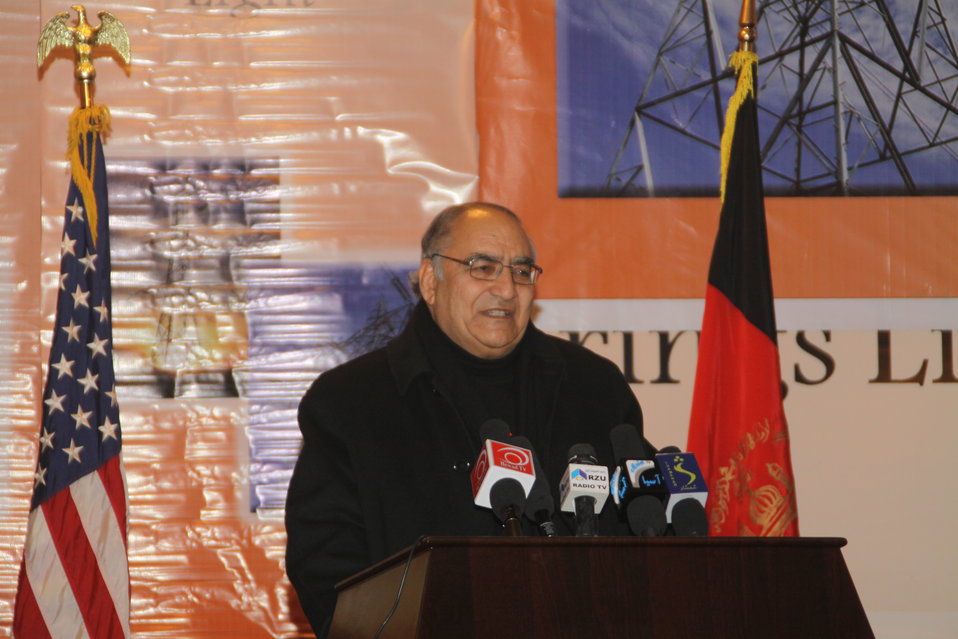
Dr. Shams